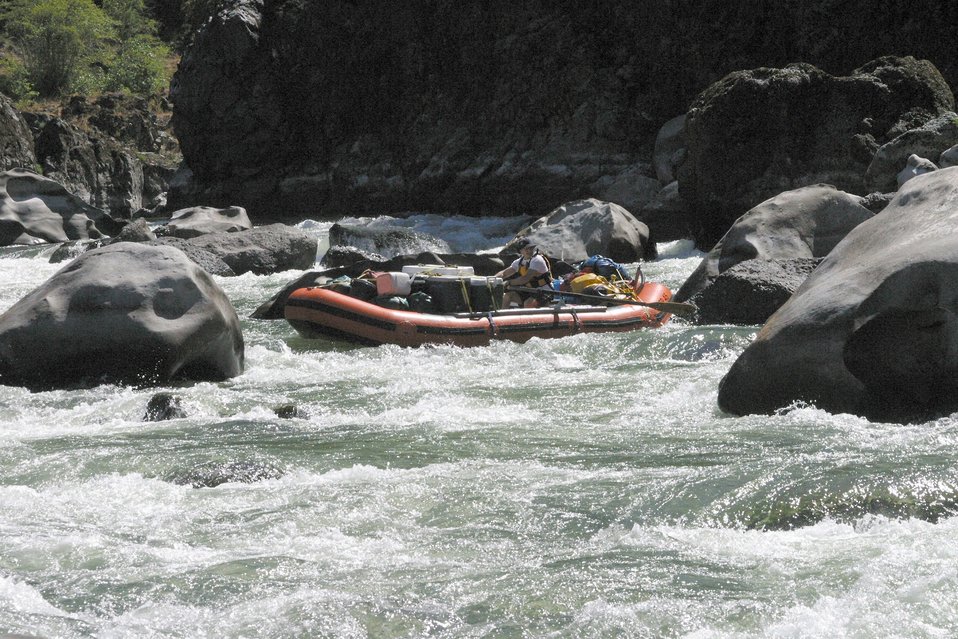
Boaters negotiate Blossom Rapids.